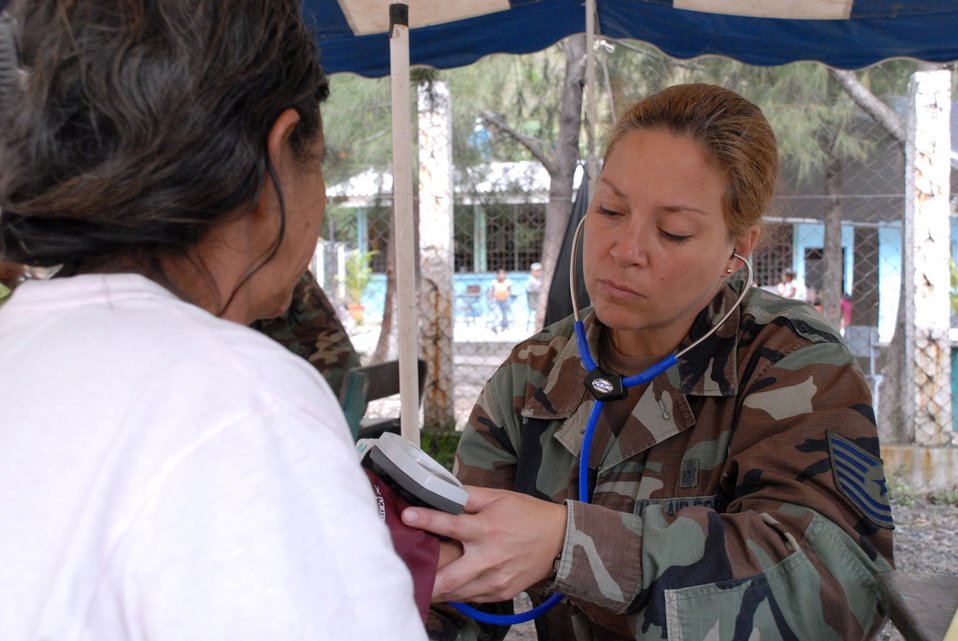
Medics provide care in Honduran villages

Tech. Sgt. Diane Strohm takes the blood pressure of a villager Oct. 19 in Cuesta de la Virgen, Honduras. This MEDRETE educated 785 Hondurans on preventive medicine issues such as hand washing, food preparation and personal hygiene. Of those 785, doctors examined 352 patients and the dentist treated 139 patients. Sergeant Strohm is an emergency medical technician assigned to the Joint Task Force-Bravo's Medical Element at Soto Cano Air Base, Honduras.